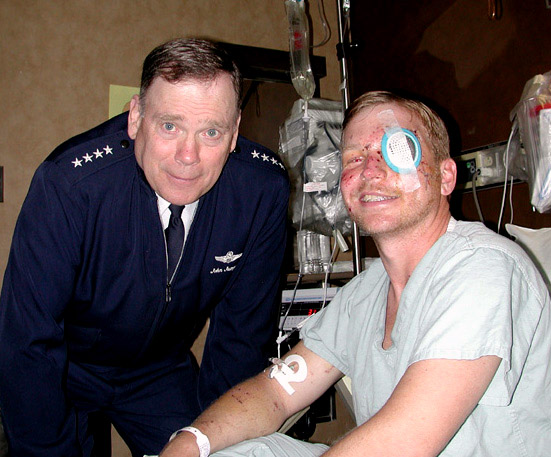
Wounded NCO's will to fly remains undaunted

Then-Air Force Chief of Staff Gen. John Jumper visits Tech. Sgt. Christian MacKenzie at Wilford Hall Medical Center in 2004 at Lackland Air Force Base, Texas. Sergeant MacKenzie, who served as a special operations MH-53 Pave Low flight engineer, was shot down April 13, 2004, in Fallujah, Iraq.